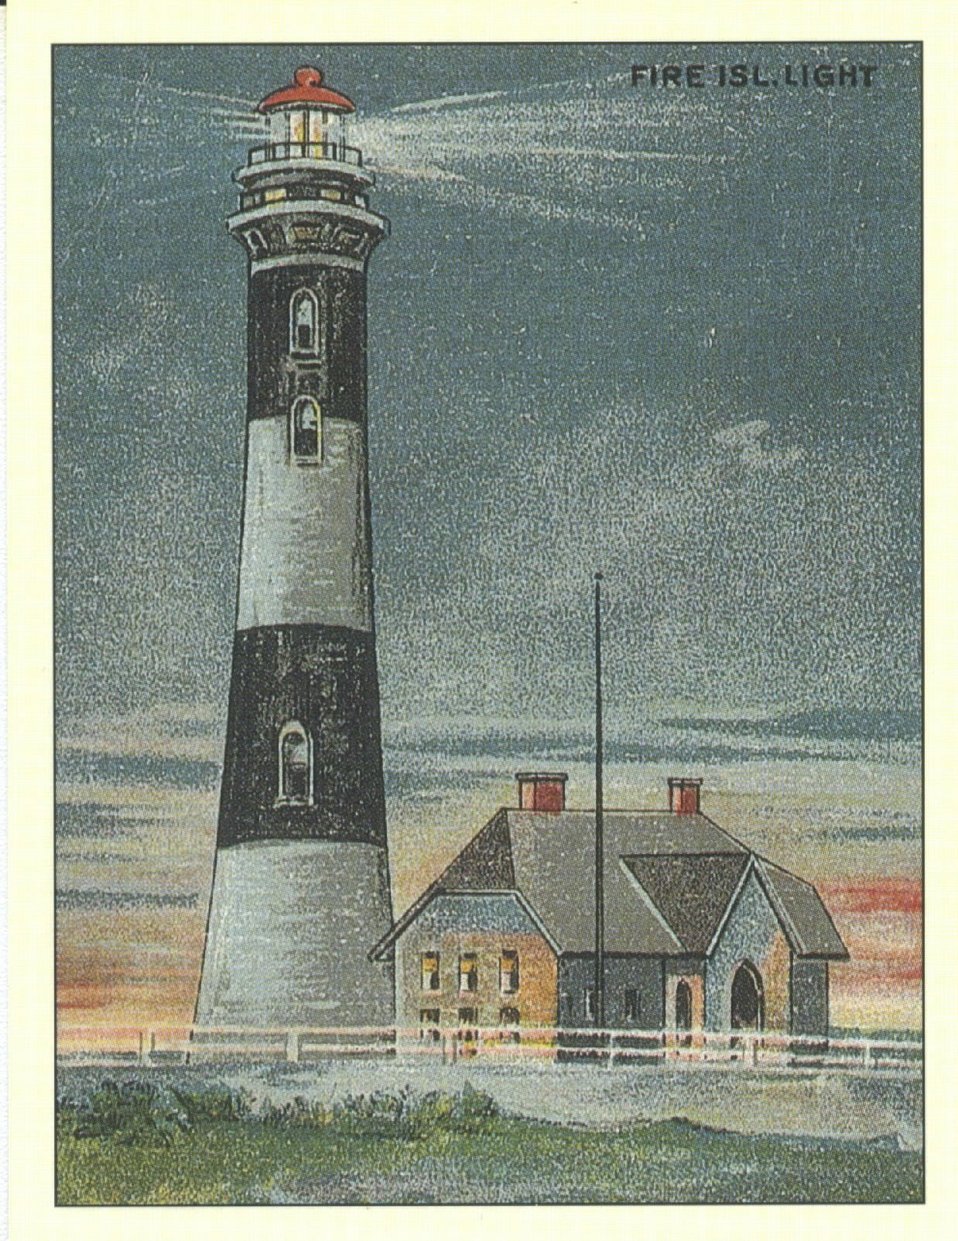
Fire Island Lighthouse